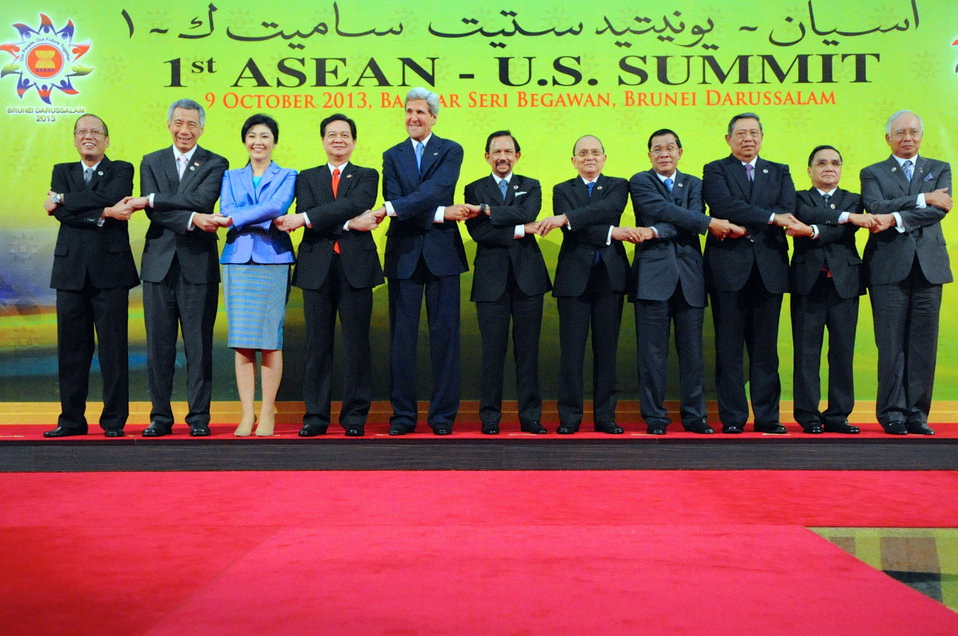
Secretary Kerry, ASEAN Leaders Pose for a Family Photo

U.S. Secretary of State John Kerry poses with representatives of the 10 member-nations, as well as the Secretary-General, of the Association of Southeast Asian Nations for a group photo before the start of a U.S.-ASEAN Summit meeting in Bandar Seri Begawan, Brunei, on October 9, 2013.